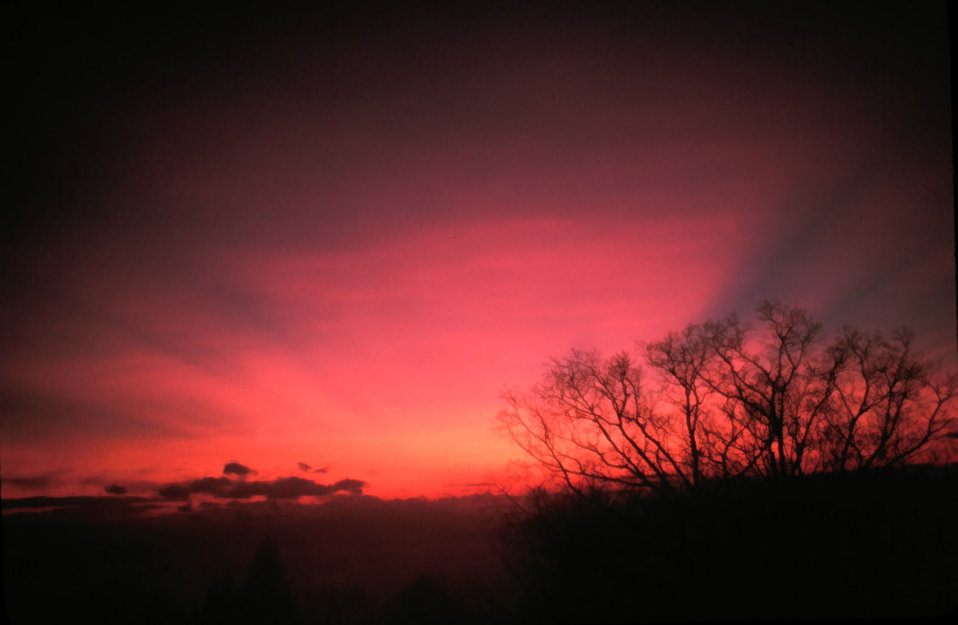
Sunset with shadow bands Color due to interception of sunlight by distant clouds or mountain peaks